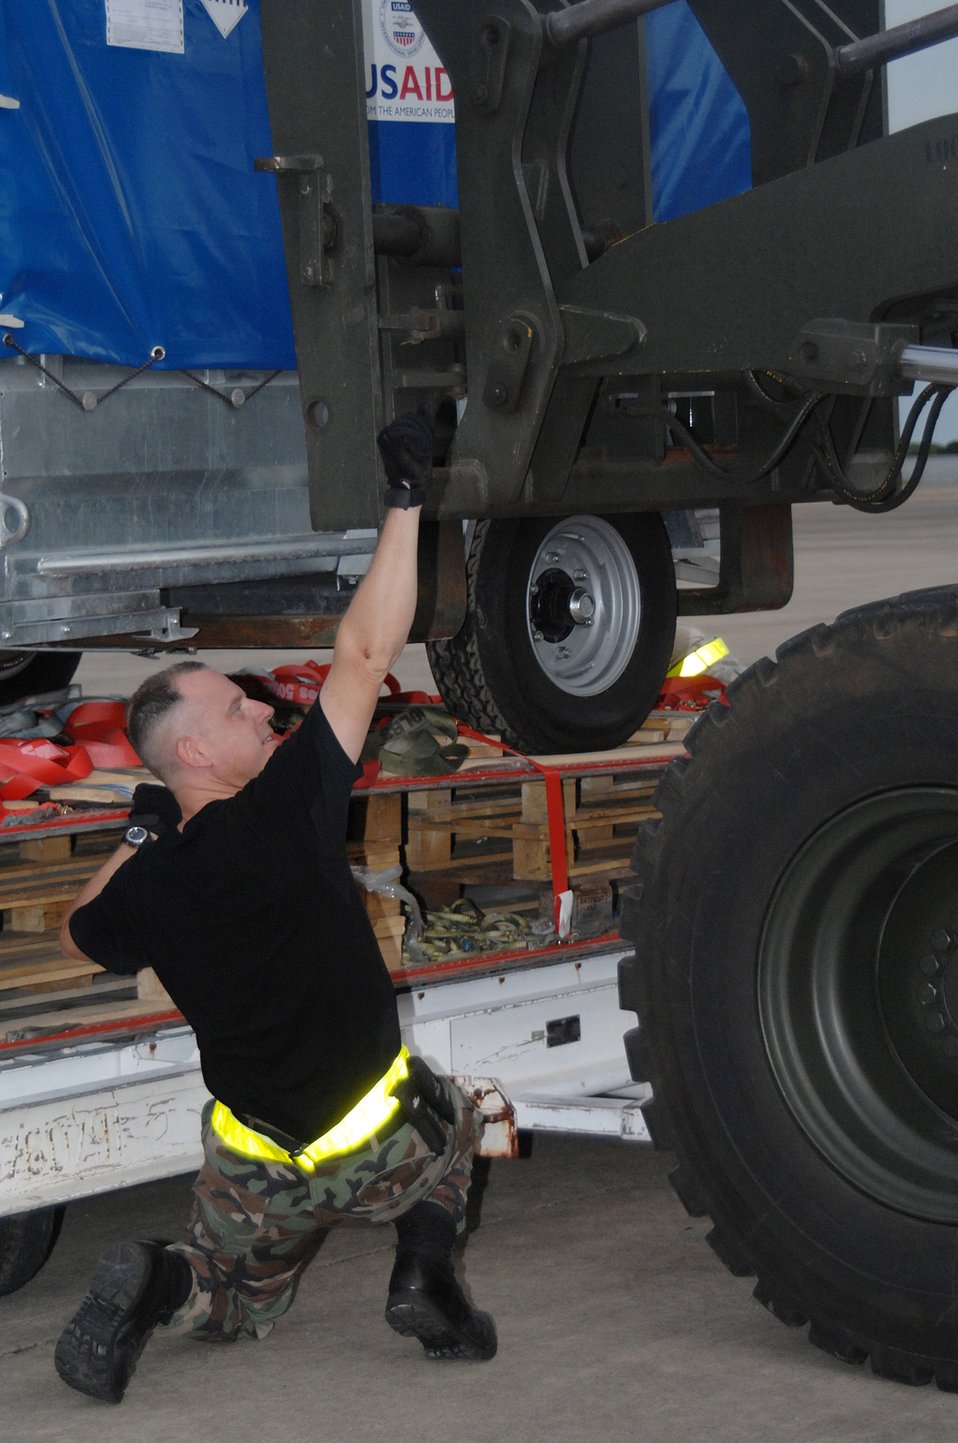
Help is on the Way

Tech. Sgt. John Kortez directs a forklift driver transferring humanitarian relief supplies being downloaded from a Boeing 747 commercial airplane May 16 at Utapao Thai Royal Navy Air Base, Thailand, for delivery to Burma. Sergeant Kortez is with the 36th Contingency Response Squadron at Andersen Air Force Base, Guam.